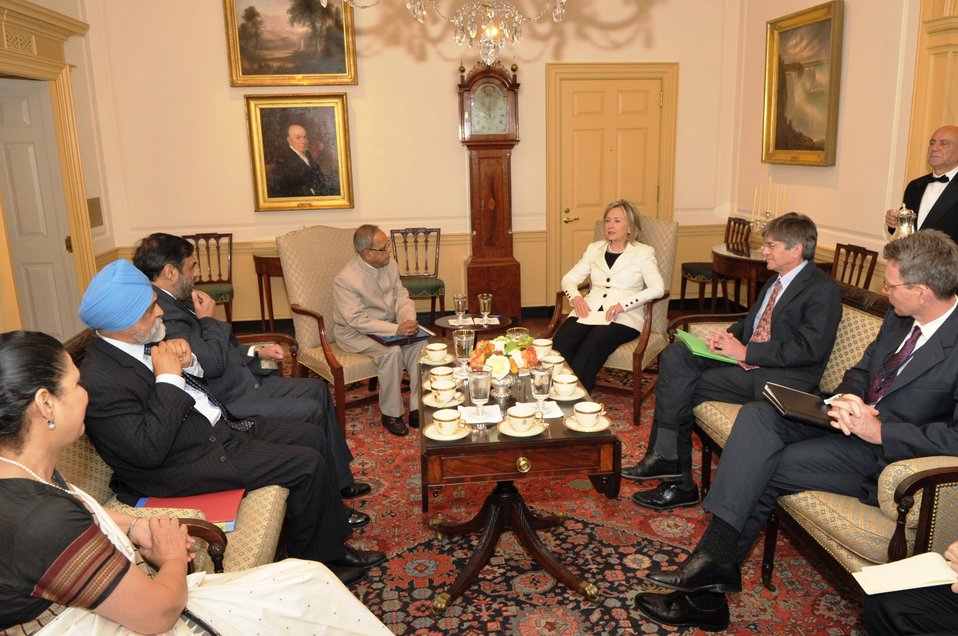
Secretary Clinton Meets With Indian Ministers

(Left to right) Indian Ambassador to the U.S. Meera Shankar, Indian Deputy Chairman of the Planning Commission Montek Singh Ahluwalia, Indian Commerce Minister Anand Sharma, Indian Finance Minister Pranab Mukherjee, U.S. Secretary of State Hillary Rodham Clinton, U.S. Deputy Secretary James Steinberg, and U.S. Acting Assistant Secretary Geoffrey Pyatt discuss U.S.-India issues at the U.S. Department of State in Washington, D.C., on June 22, 2010.